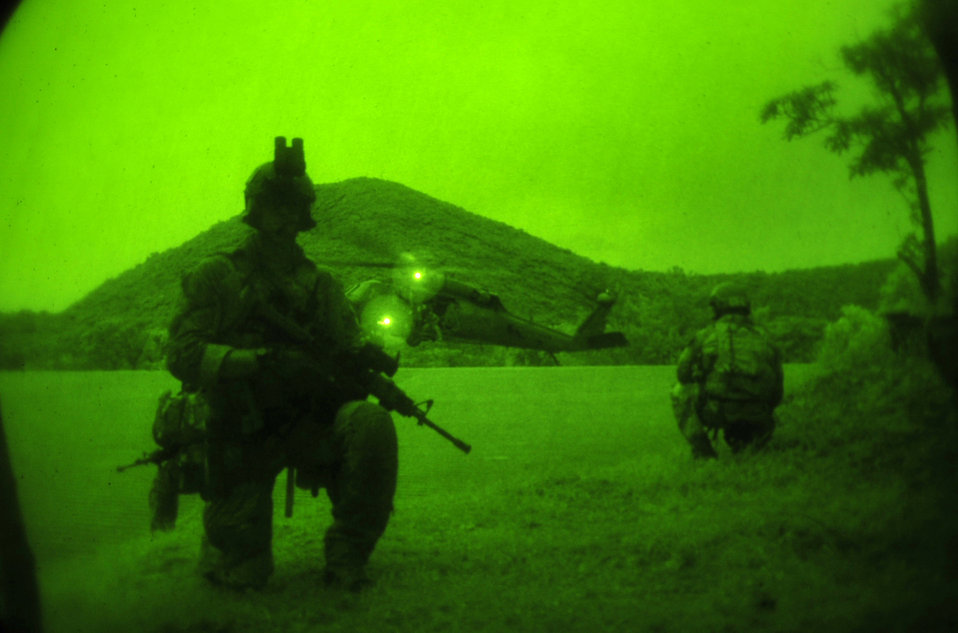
Airmen learn essential skills during joint combat training exercise

Capt. Nicholas Wilson watches over his fellow pararescuemen during a joint training exercise July 28, 2010, at Kadena Air Base, Japan. The pararescuemen worked together to broaden their ability to treat and transport injured servicemembers safely out of the battlefield.